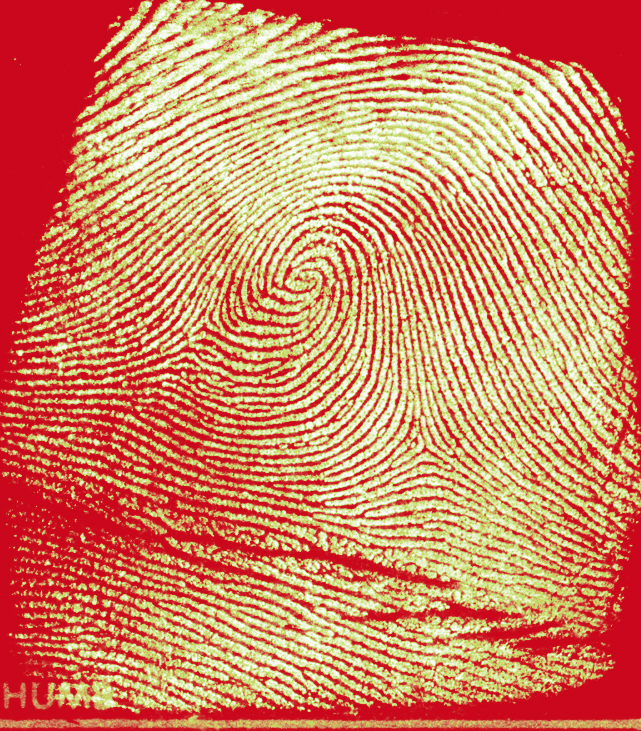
Fingerprint Identification

Determining the identity of the owners of latent prints is often key to crime scene research, such as the owner of this latent printed pulled from a fingernail file. A NIST test shows that emerging software that automates the extraction of distinguishing features from latent prints is more advanced than expected.